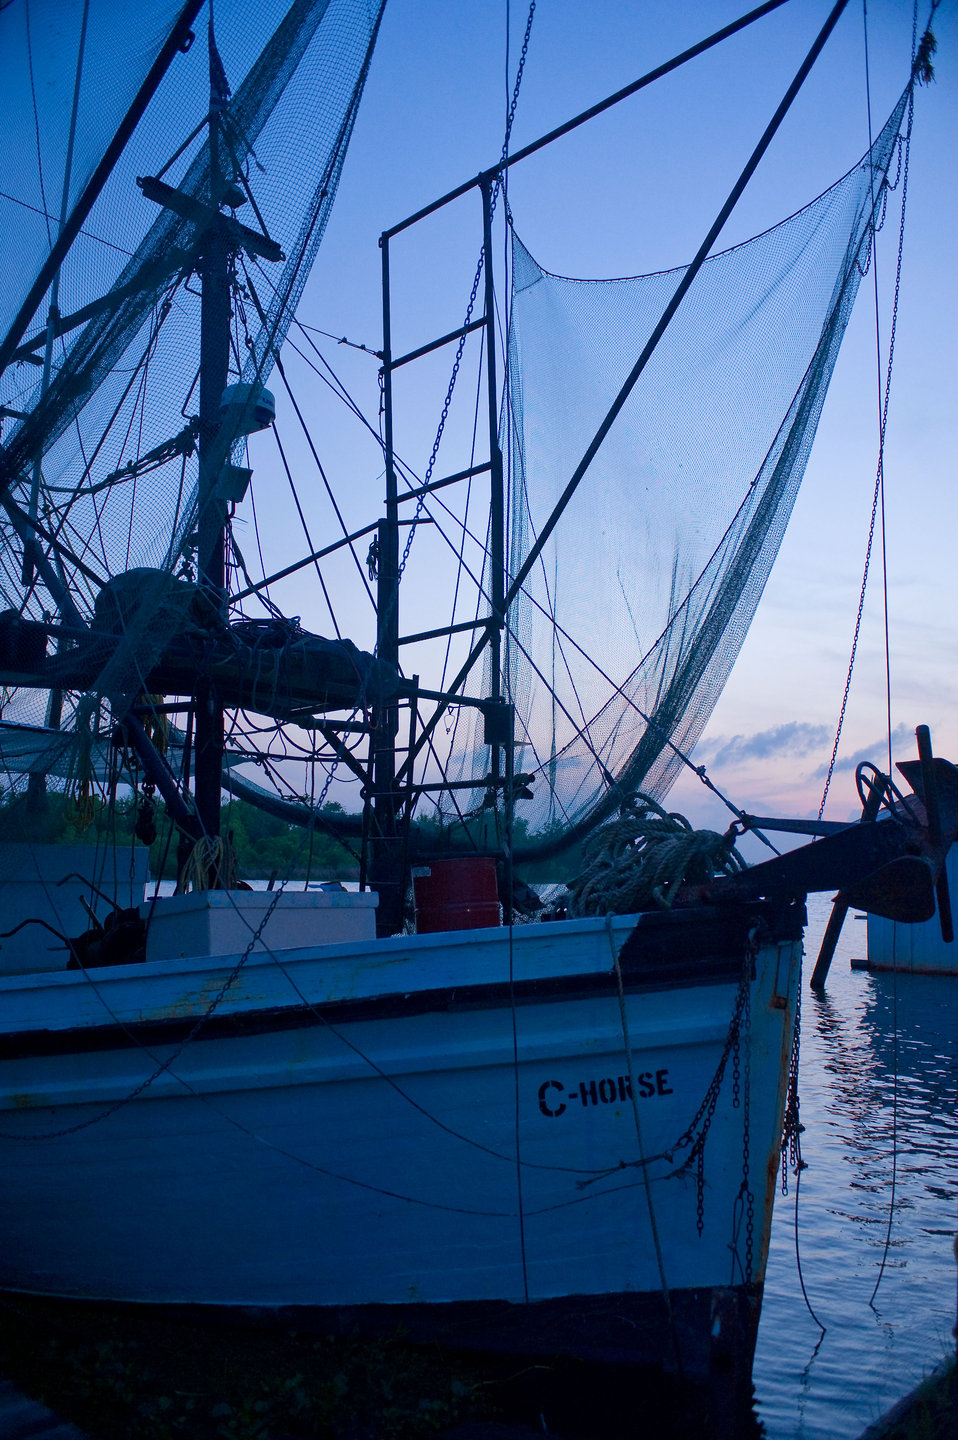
A lot at stake.

May 12, 2010.